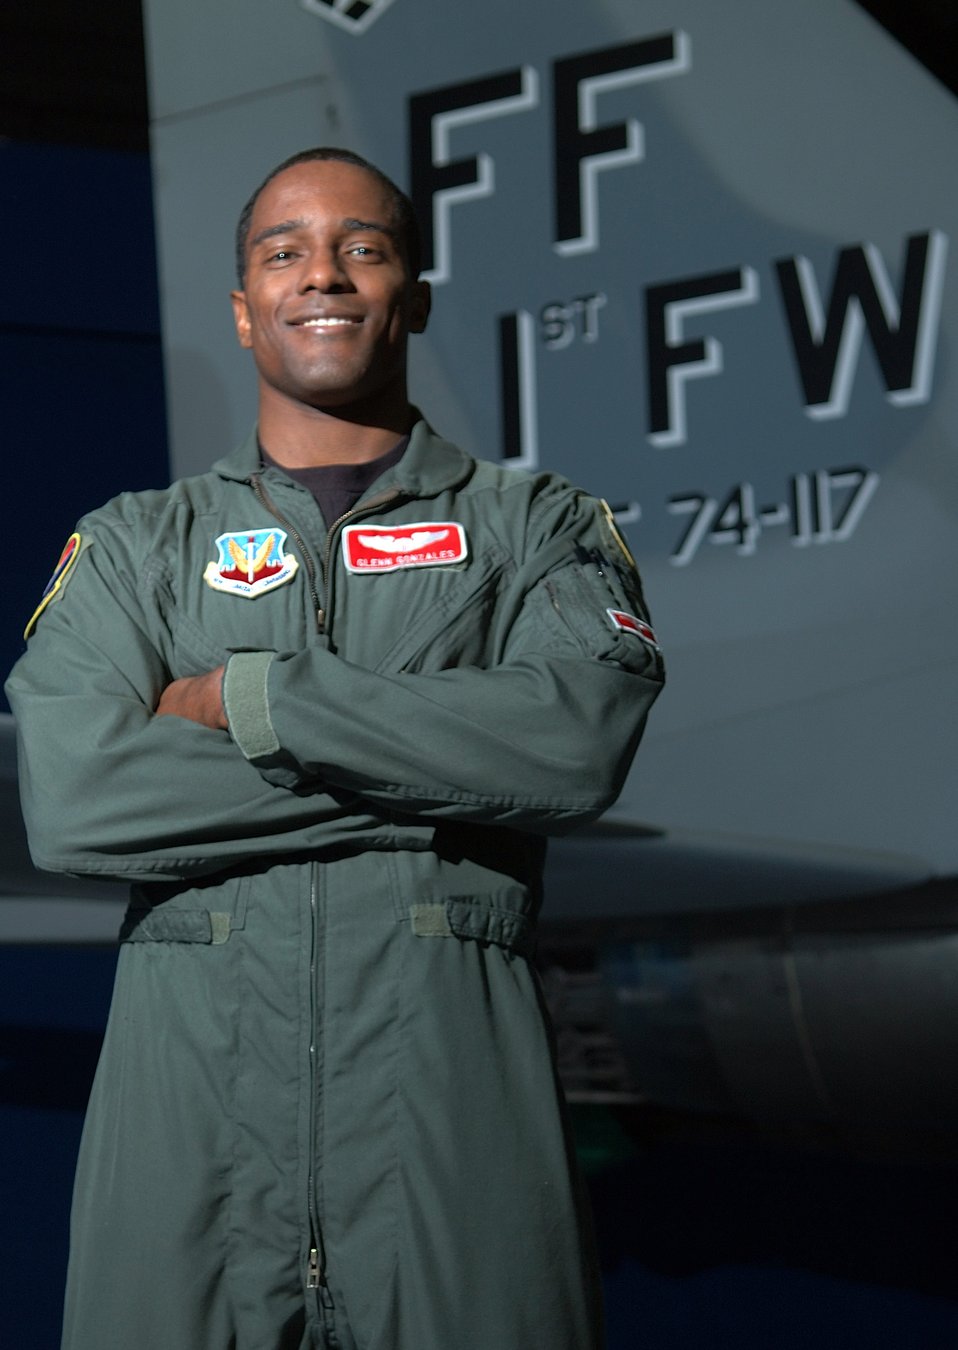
Pilot looks to legacy

LANGLEY AIR FORCE BASE, Va. (AFPN) - Capt. Glenn Gonzales is one of the many applicants to apply for membership as a Tuskegee Airmen in the Hampton Roads area. He is a pilot for the 71st Fighter Squadron here.